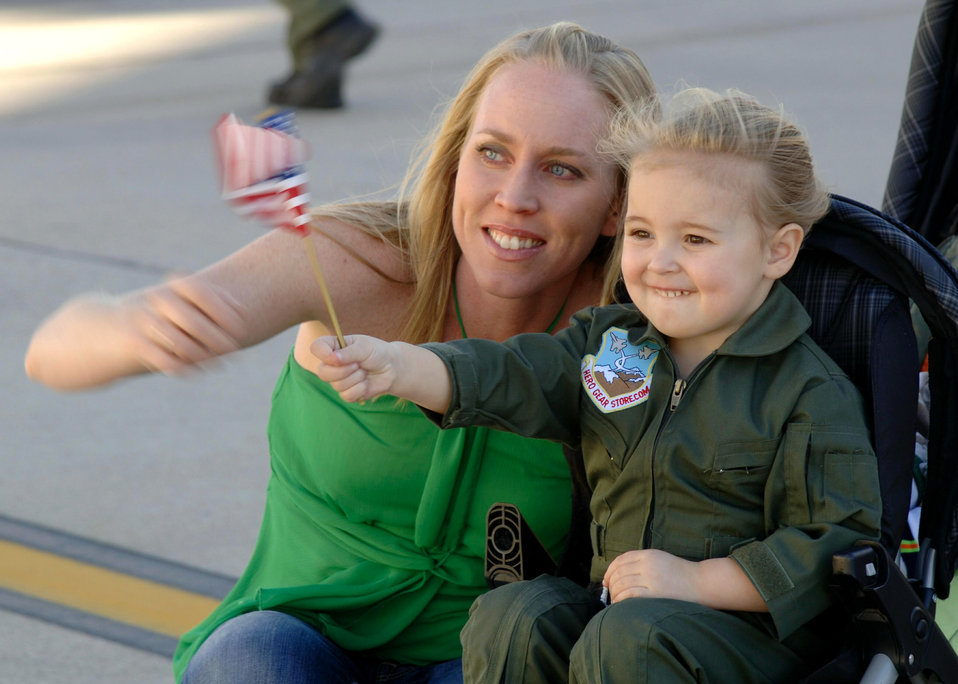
Welcome home

DAVIS-MONTHAN AIR FORCE BASE, Ariz. (AFPN) -- Lisa Annis, wife of Capt. Jay Annis, awaits the return of her husband along with their daughter Addison Feb. 10. Captain Annis, an A-10 Thunderbolt II pilot with the 354th Fighter Squadron, was deployed to Bagram Air Base, Afghanistan, in support of Operation Enduring Freedom.